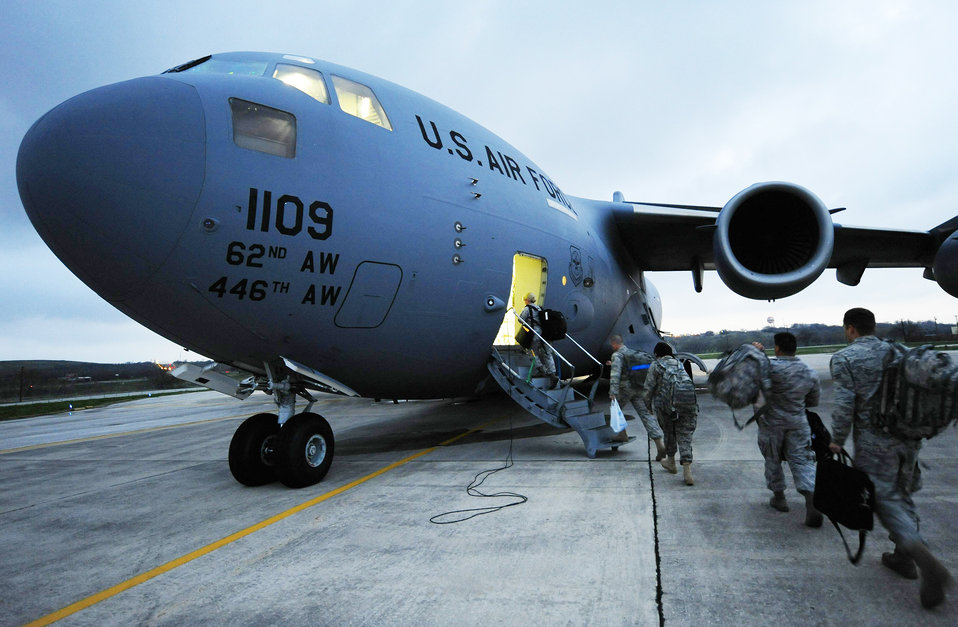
Airmen build hospital in Chile

Airmen from an Air Force Expeditionary Medical Support team depart for a humanitarian mission to Angol, Chile, March 8, 2010, from Lackland Air Force Base. The Airmen will set up an expeditionary hospital in Angol after their local hospital was deemed unstable in the 8.8 magnitude earthquake Feb. 27. Air Force medics will work alongside Chilean medics to provide medical support for more than 110,000 in the region.